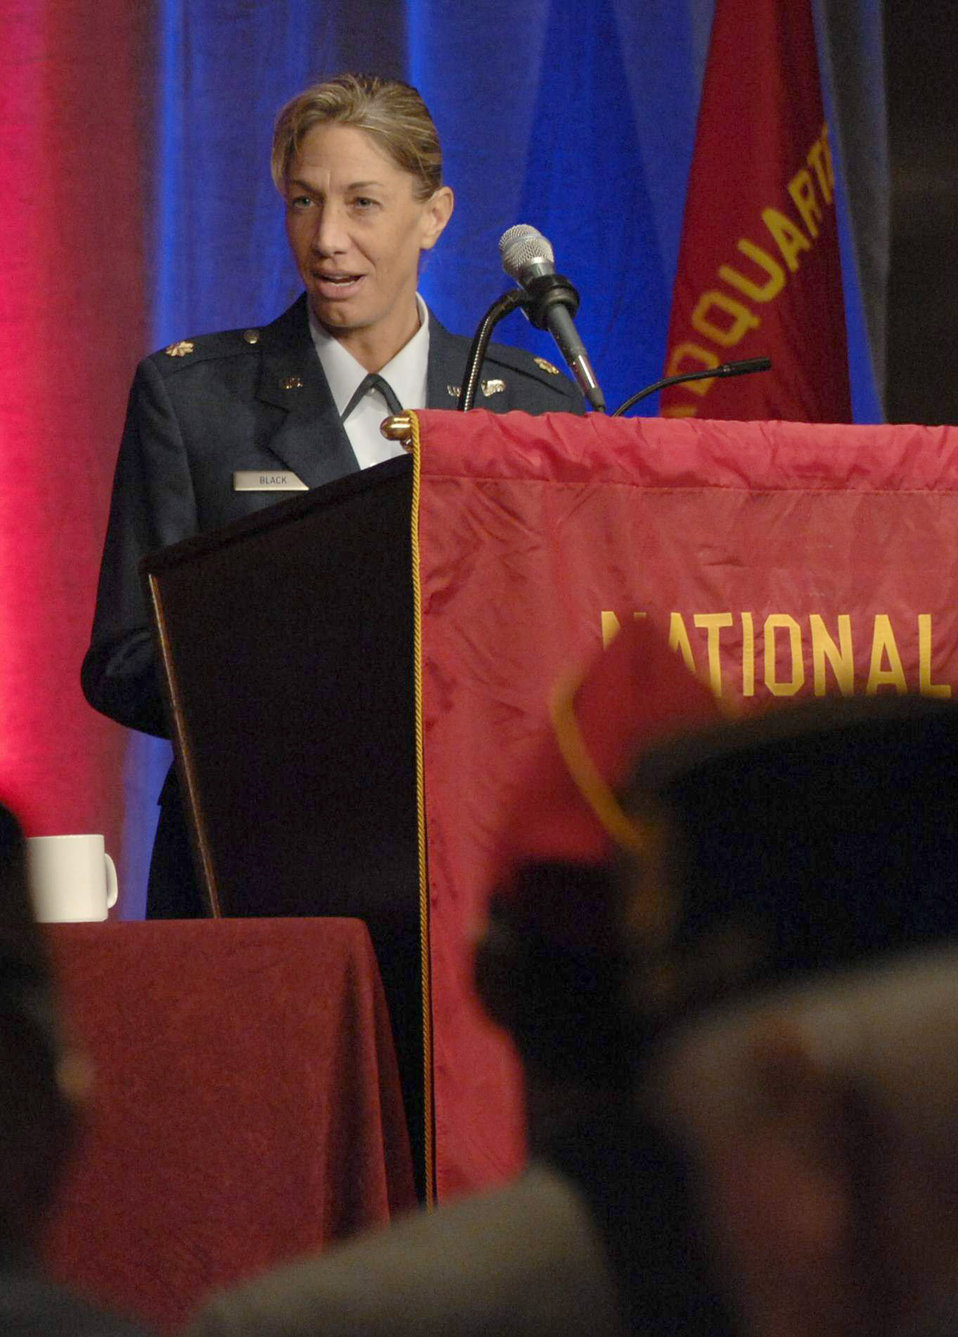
Air Force officer

Secretary of the Air Force Public Affairs Operations Communication Team Chief Maj. Allison Black shared her experiences in modern warfare with more than 700 veterans during the American Legion mid-winter conference March 22, 2011, in Washington. The former AC-130H Spectre evaluator navigator recounted how she and her crew flew into Northern Afghanistan insurgent territory in 2001, while assigned to the 16th Special Operations Squadron at Hurlburt Field, Fla. Major Black is the first female AC-130H navigator to shoot in combat operations and the first female Air Force Combat Action Medal recipient.